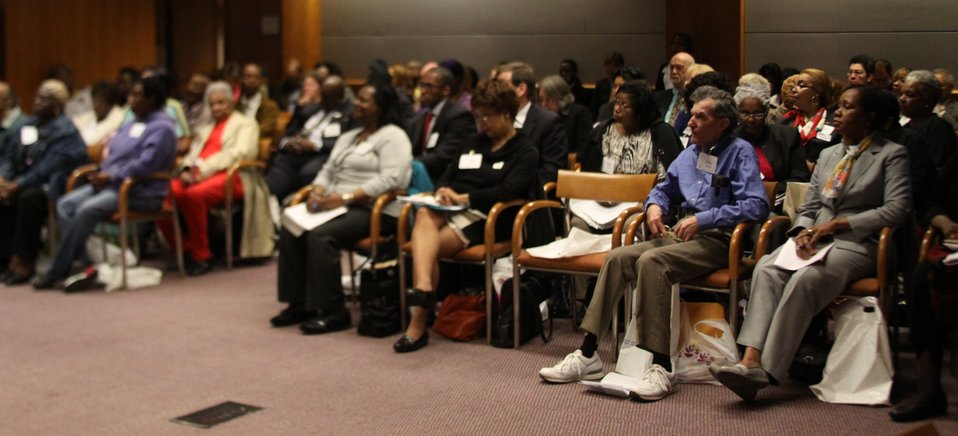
Digital Literacy for Seniors: How the Internet Can Benefit Older Americans, April 24, 2013